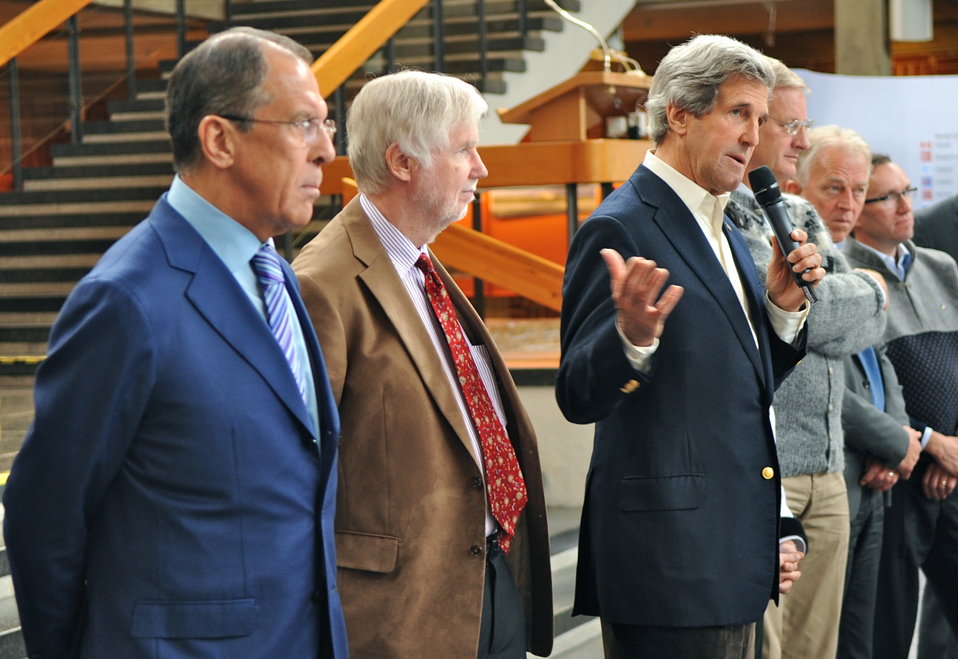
Secretary Kerry Attends Closing Session of the Arctic Council Meeting

U.S. Secretary of State John Kerry answers a question during a ministerial news conference at the conclusion of an Arctic Council meeting in Kiruna, Sweden, on May 15, 2013.